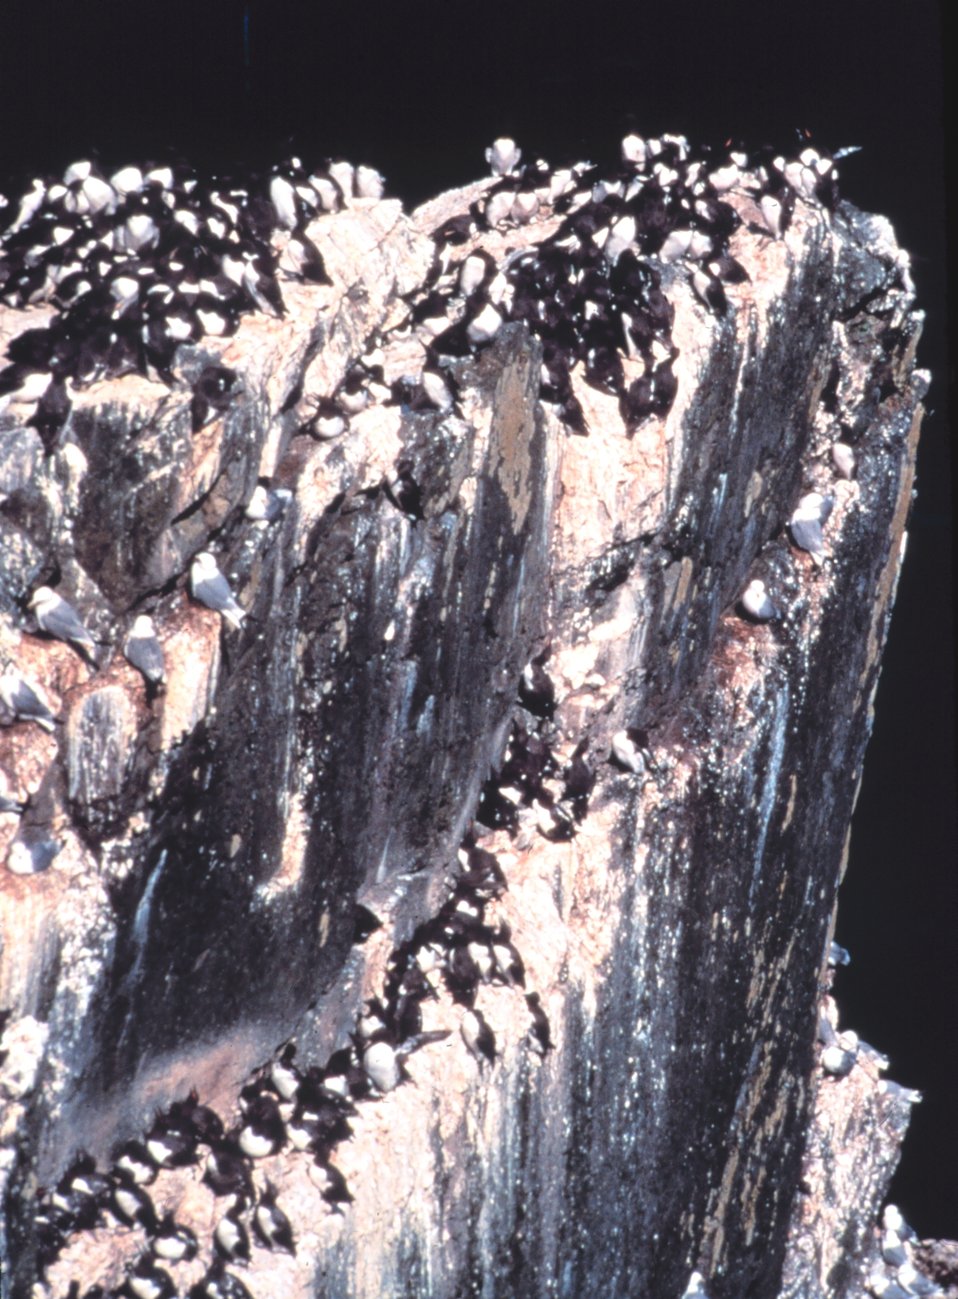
Murre colony